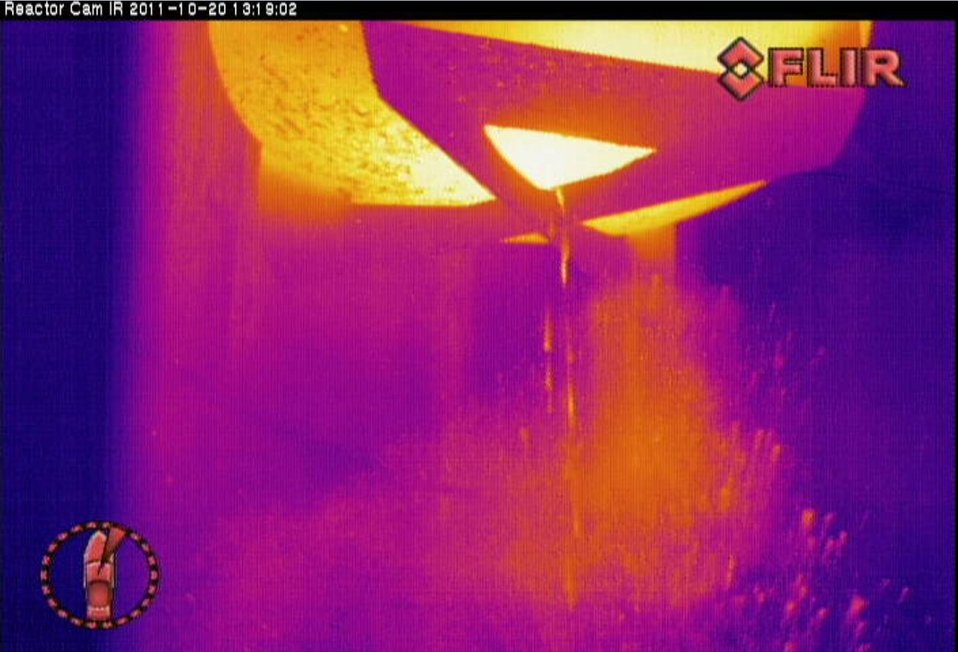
Innovations for Sodium-Cooled Reactor Deactivation and Decommissioning

Photo of inside the EBR-II reactor showing the first molten sodium dripping (top of photo) from the intermediate heat exchanger during sodium treatment.

During Fiscal Year 2011, the U.S. Department of Energy’s Office of Deactivation and Decommissioning (D&D) and Facility Engineering teamed with scientists and engineers from the Idaho Cleanup Project (ICP) to eliminate highly reactive sodium from the decommissioned Experimental Breeder Reactor II (EBR-II) at the Idaho National Laboratory Site.